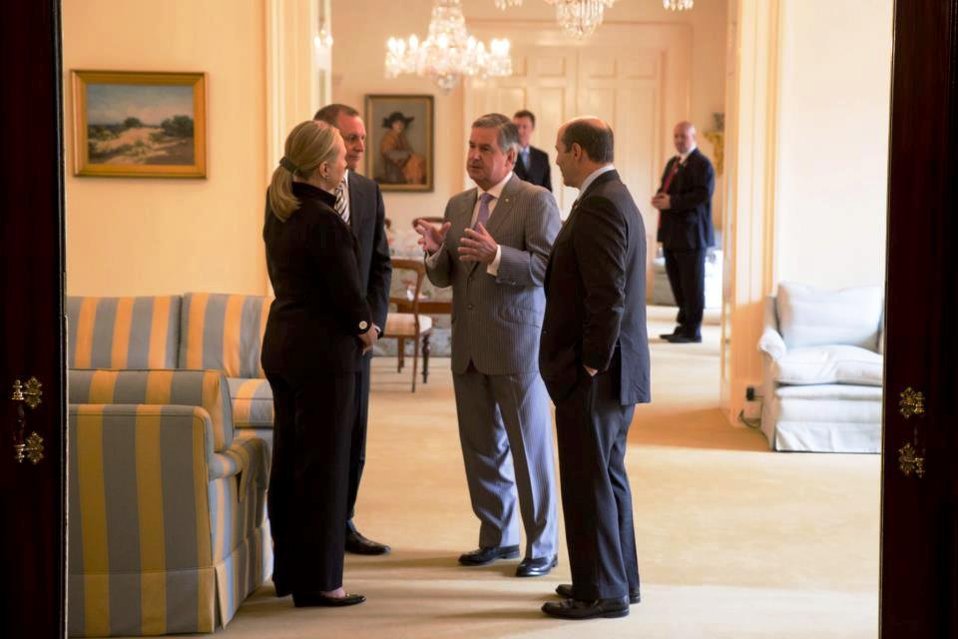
Secretary Clinton, Premier Weatherall, and Rear Admiral Searce Meet

From left to right, U.S.Secretary of State Hillary Rodham Clinton, Premier of South Australia Jay Weatherall, and Governor of South Australia Rear Admiral Kevin Searce meet at the Government House in Adelaide, Australia, November 15, 2012.